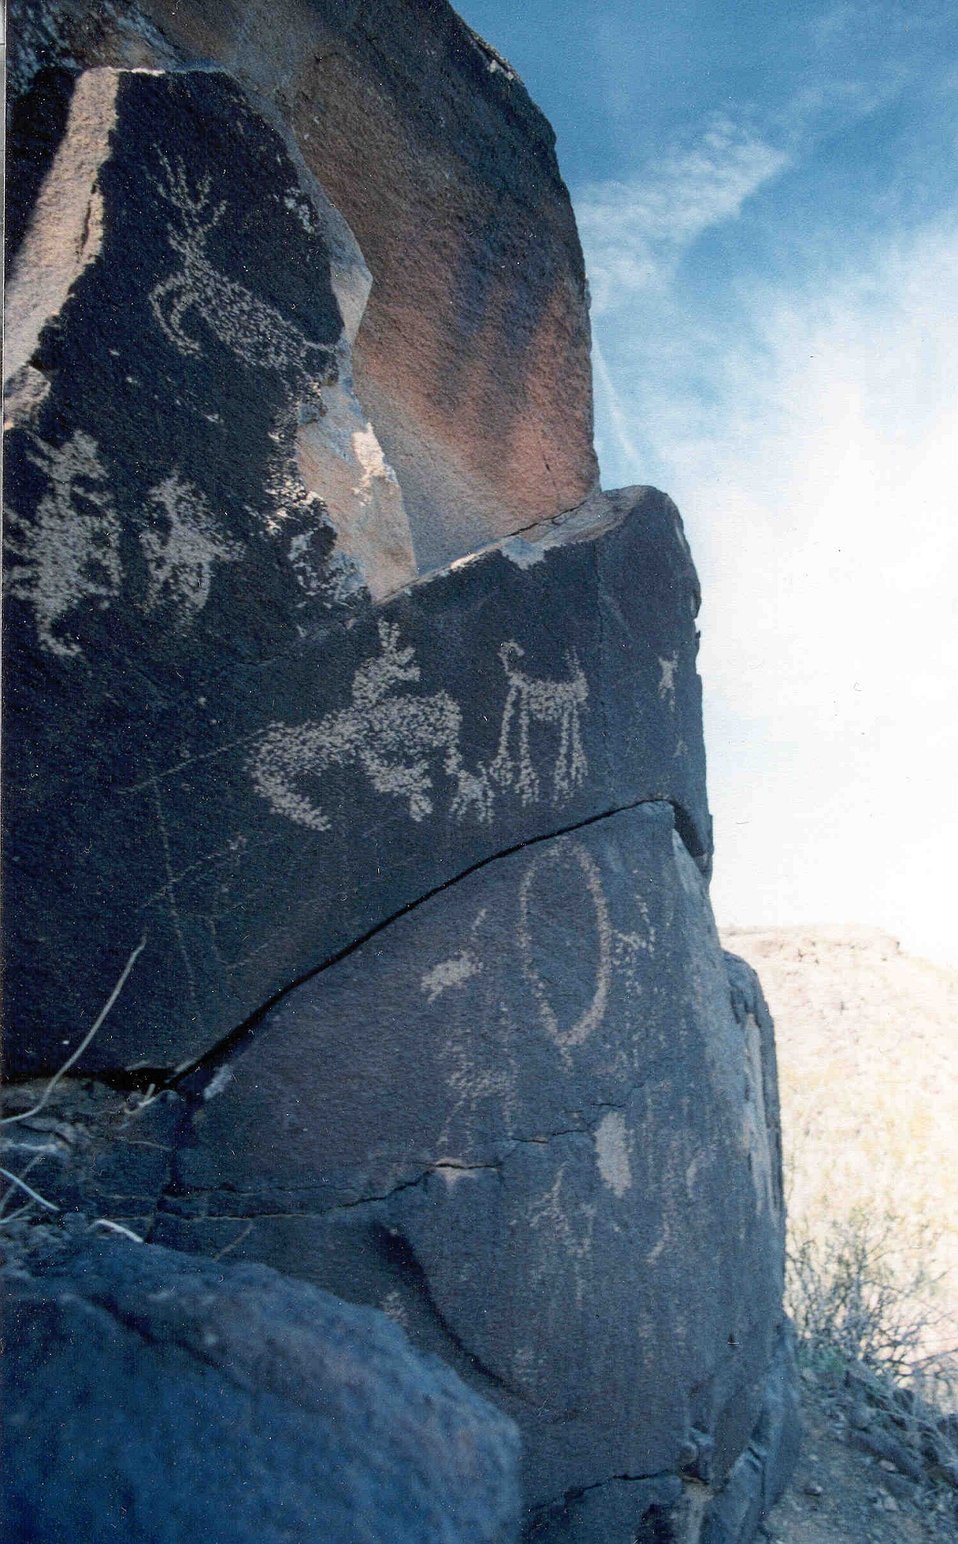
Petroglyphs at Sears Point Archaeological Site